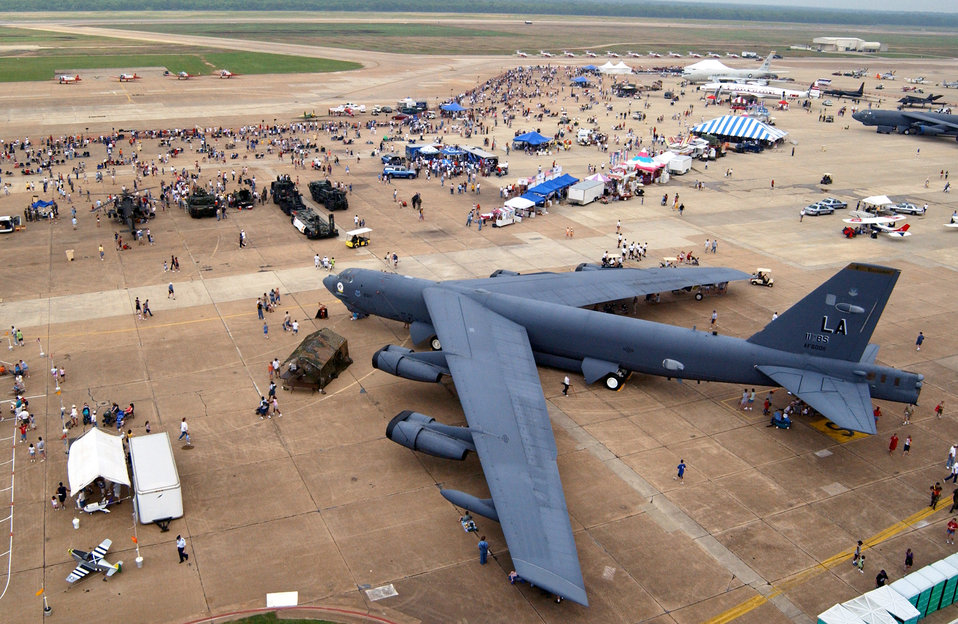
View from above

BARKSDALE AIR FORCE BASE, La. -- A view looking down on the 2003